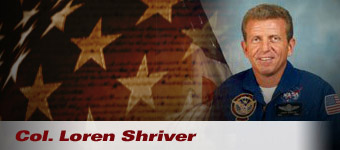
Col. Loren Shriver was the pilot of STS-51C Discovery, the first all-military space launch mission.